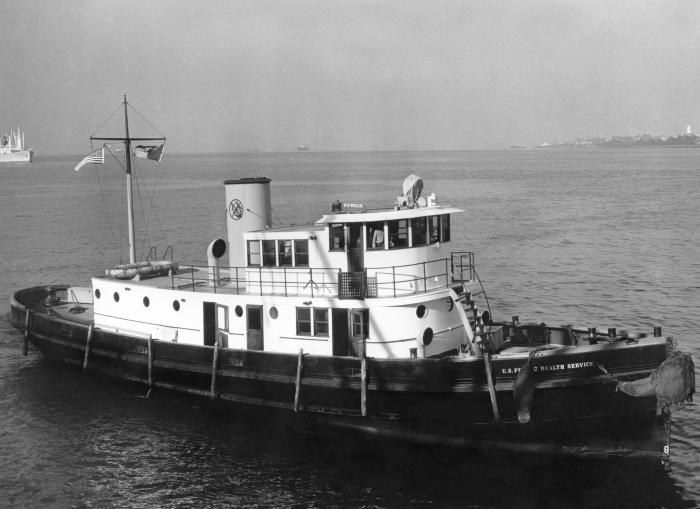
This was a U.S. Public Health Service ship, which was anchored in New York Harbor while being quarantined.